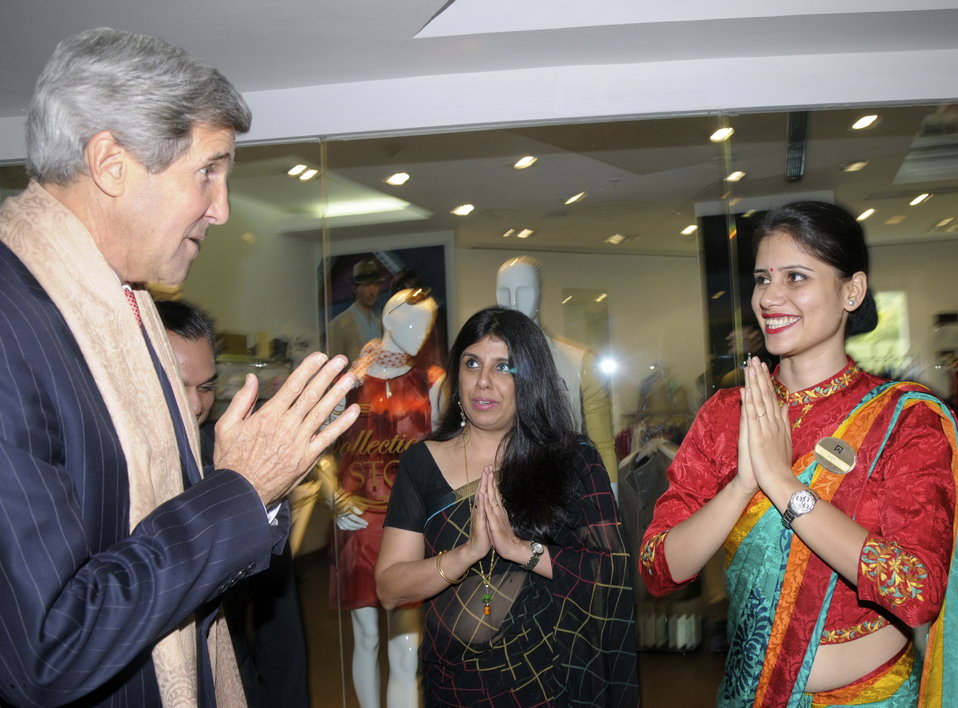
Secretary Kerry Participates in a Traditional Namaste Welcoming Ceremony

U.S. Secretary of State John Kerry participates in a traditional namaste welcoming ceremony upon his arrival to New Delhi, India on June 23, 2013.